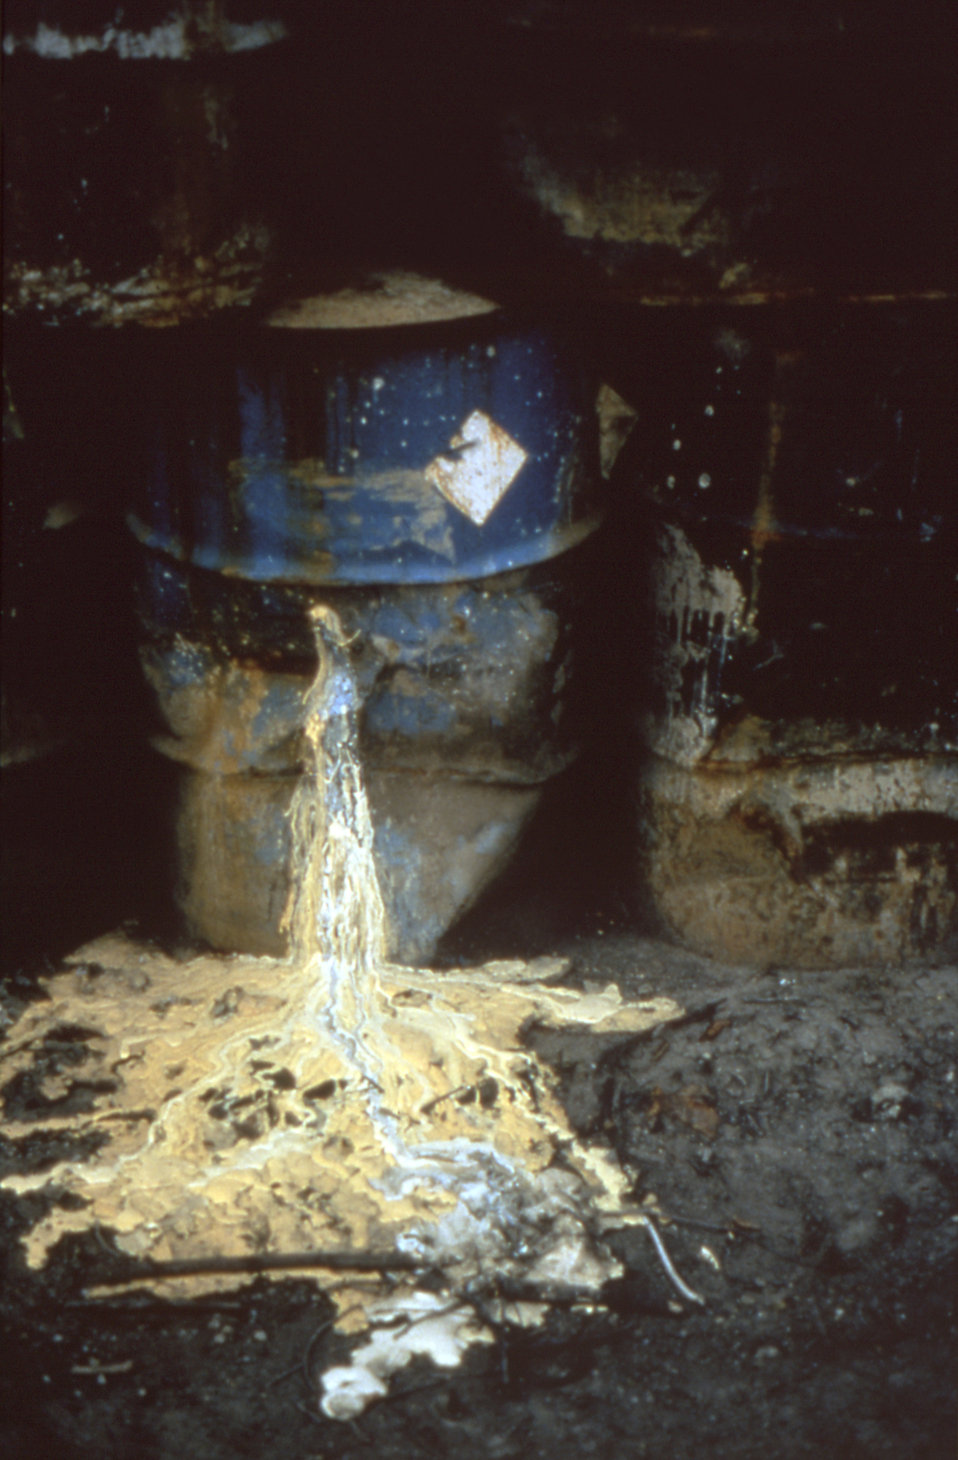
Here we see a leaking 50 gallon metal drum, dumping its toxic contents on to the surrounding ground. It is sometimes the case that these metal drums contain chemical contents, which depending on how they are stored, over time disintegrate, both as a result of the contents eating away at the container, and the detrimental effects the elements have upon the drums as well.